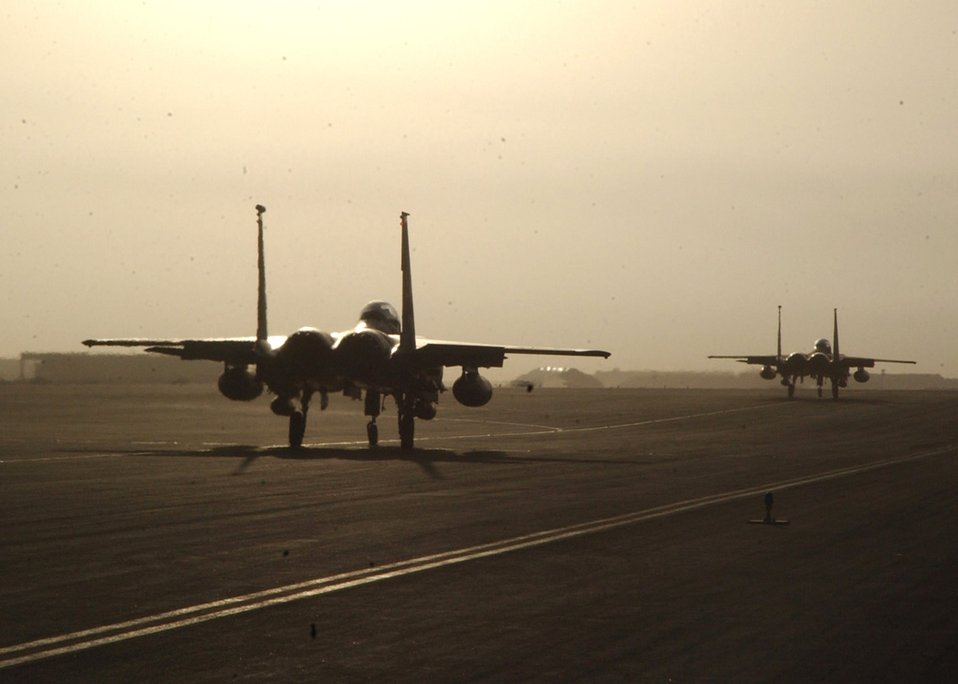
Deployed fighters

SOUTHWEST ASIA (AFPN) -- Two F-15E Strike Eagles taxi down the flightline here Jan. 25. The Strike Eagles were assigned to the 492nd Expeditionary Fighter Squadron. The unit returned to its home station at Royal Air Force Lakenheath, England, Jan. 25.